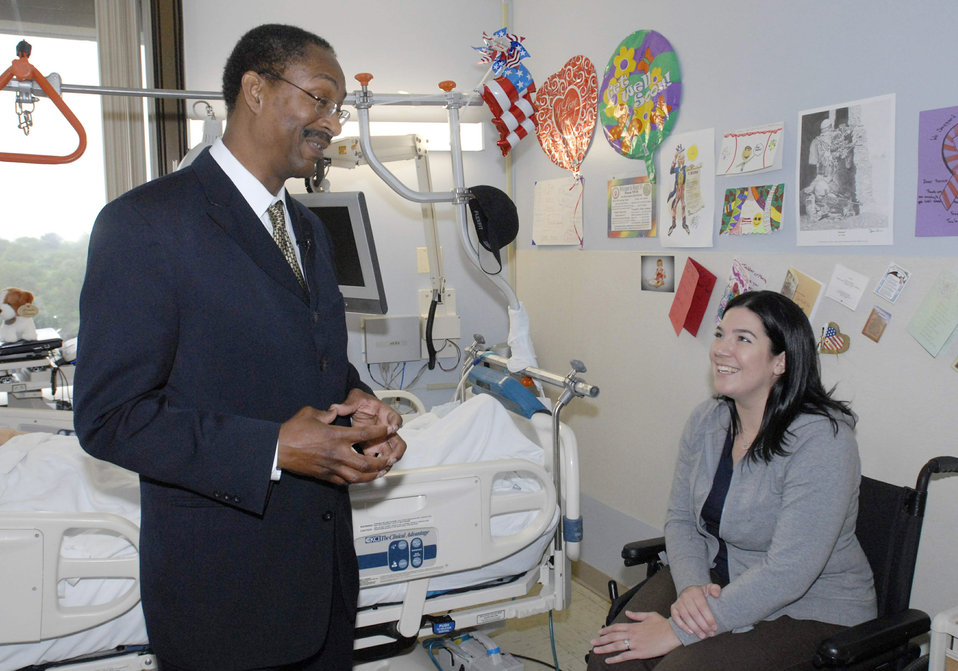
Wounded warrior program assists Airmen, families

Cara Light chats with Dennis Fritz about the much appreciated assistance she and her husband, Staff Sgt. Steve Light, have received June 19 at Walter Reed Army Medical Center in Washington, D.C. Sergeant was the lone vehicle survior in a roadside explosion in Afganistan. Mr. Fritz is the Walter Reed Army Medical Center recovery care coordinator.